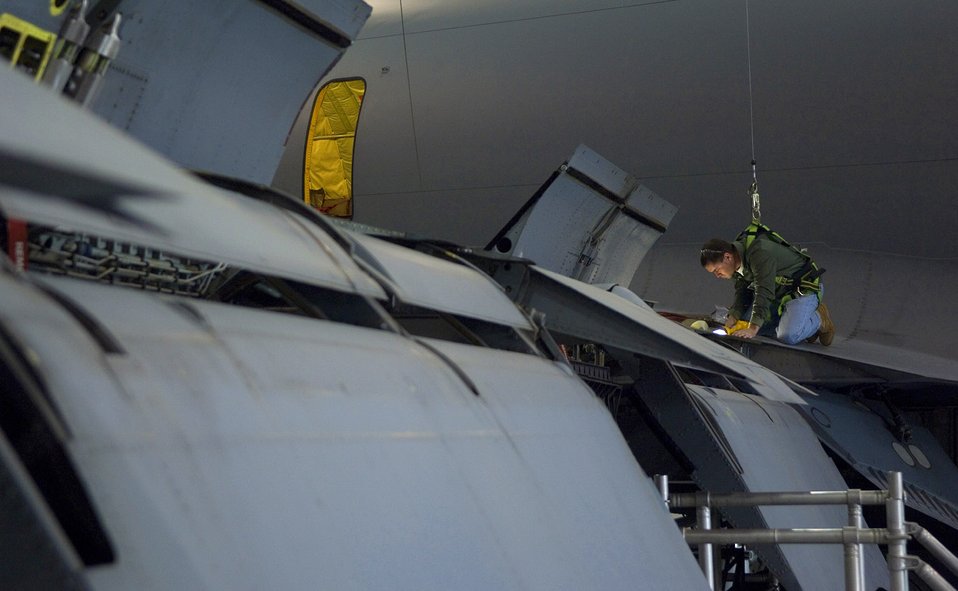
KC-135 Stratotanker

Tech. Sgt. Jamie Quick works to replace a hinge bracket on the wing of a 507th Air Refueling Wing KC-135R Stratotanker May 14. The 507th Air Refueling Wing is the largest Air Force Reserve Command flying unit in Oklahoma. Sergeant Quick is an aircraft mechanic with the 507th ARW.